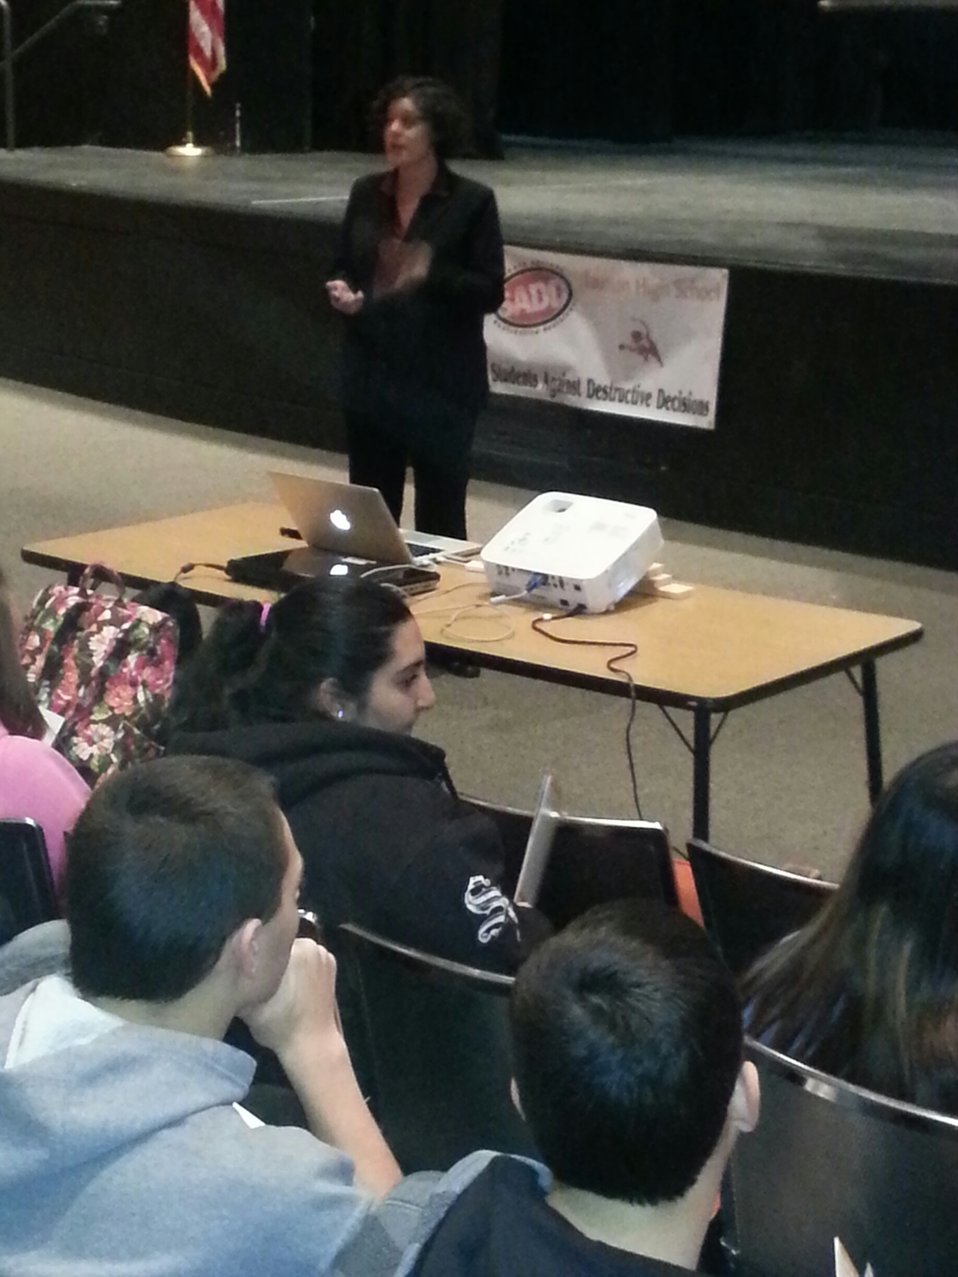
NDFW Event with Taunton High School SADD

Students Against Destructive Decisions (SADD) hosted an assembly for students featuring guest speaker Dr. Marisa Silveri of Harvard Medical School and McLean Hospital as part of SADD's 'Signature Event' program in Taunton, Massachusetts during National Drug Facts Week.